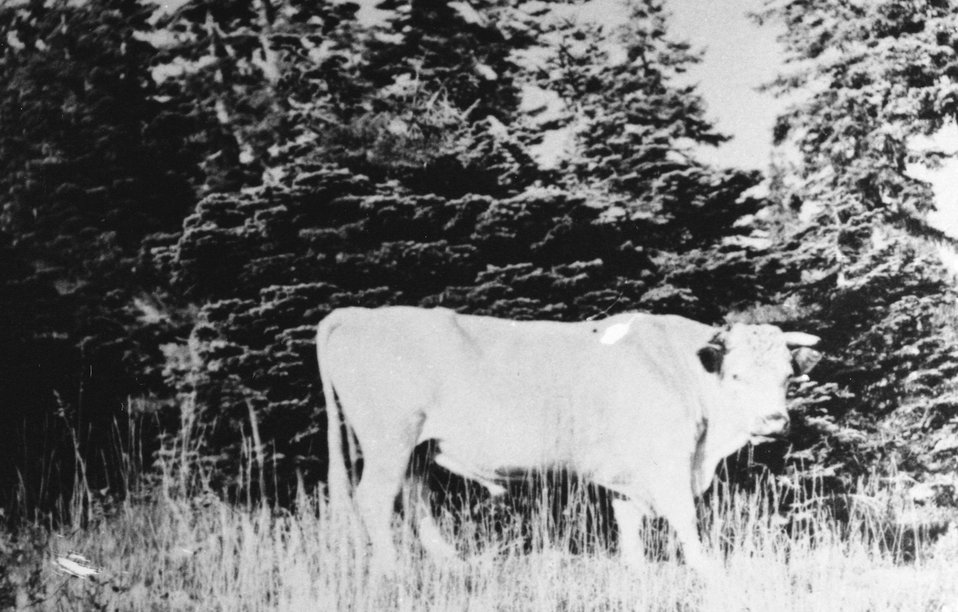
Jake Fry's Durham bull Bear Camp C. 1918